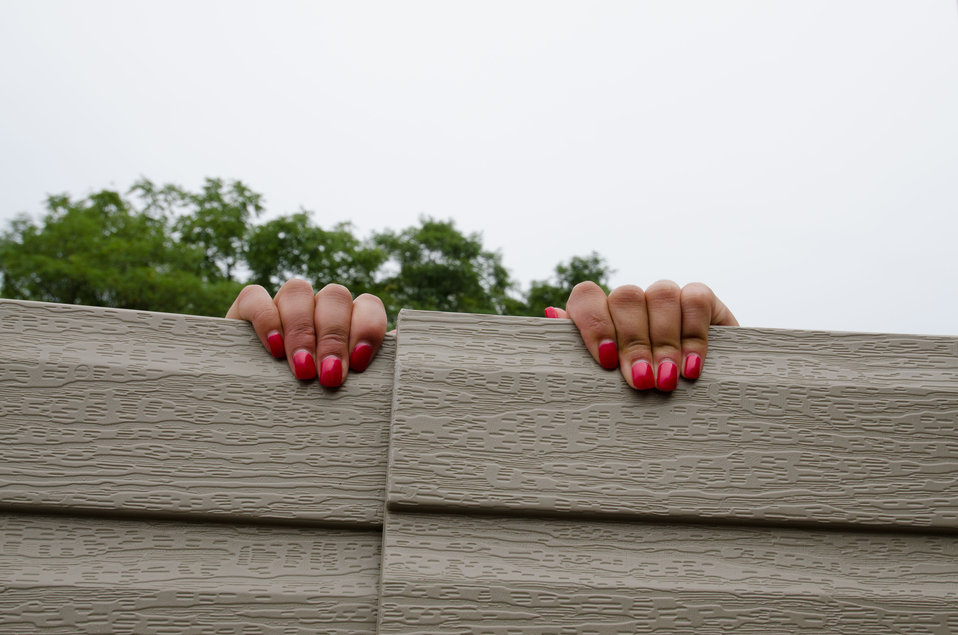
Steady hands keep toolshed walls up as others make adjustments during it's construction when U.S. Department of Agriculture (USDA) People’s Garden Executive Master Gardeners, friends, and family, along with Washington Capitals fans volunteer in District of Columbia Public Schools’ (DCPS) Beautification Day, on Saturday, August 25, 2012, at Thurgood Marshall Elementary School, in Washington, D.C. Each year people are invited to help “spruce up” public school facilities in preparation for the first day of school. More than 70 volunteers pitched in at this large school facility. The People’s Garden effort involves building and painting raised planter boxes, then preparing the soil mixture so they are “ready to grow.” Additionally, a team that includes descendants of U.S. Supreme Court Justice Thurgood Marshall assembles a prefabricated garden toolshed. The Justice’s son, John Marshall leads the team, which includes Brianna the Justice’s great-grand daughter in one of many multi-generational efforts at this school today. Washington Capitals Forward Mike Riberio, his family and mascot Slapshot participated in every project underway at Marshall School. From the outside gardens, to inside murals, and robotics worktable construction, the teams made their goals.